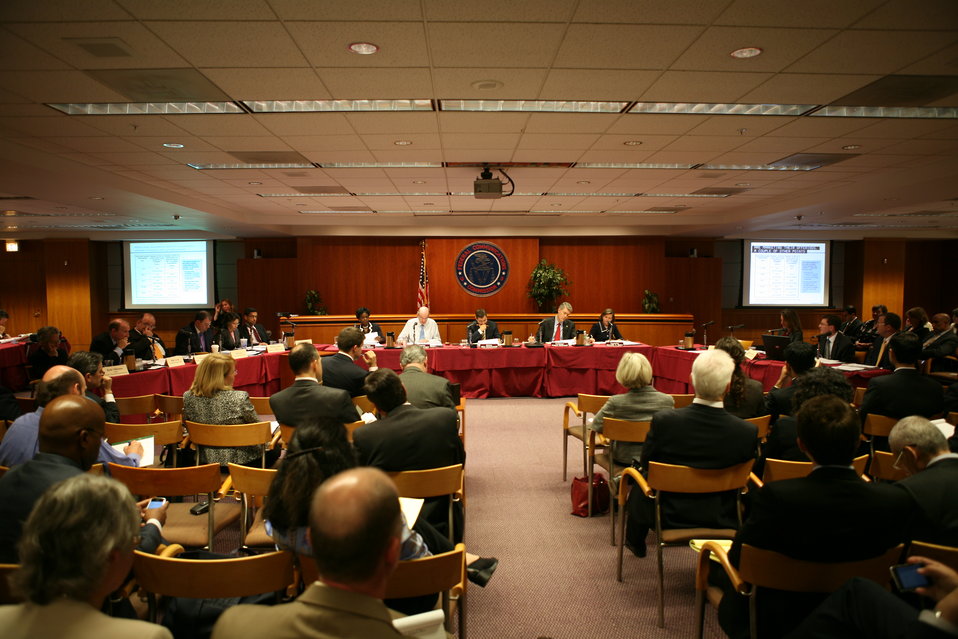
Broadband Midterm Review 9-29-09